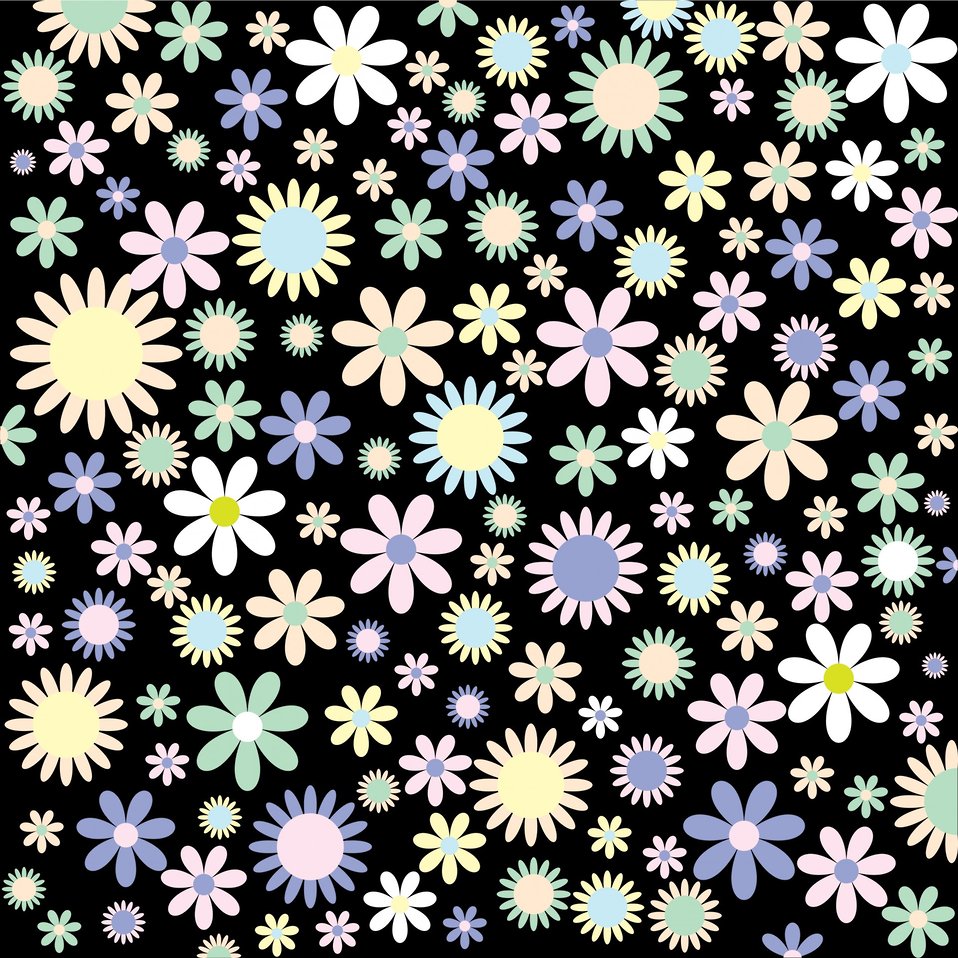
Flowers, floral pattern background

Vintage floral, flowers pattern wallpaper background.